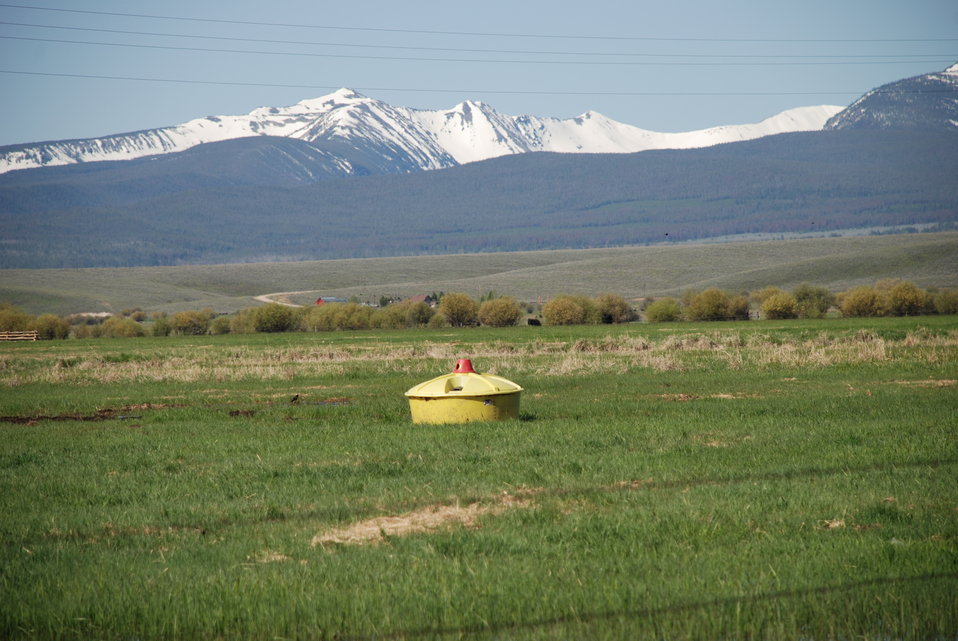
Regional Leadership Visit to Montana 2014